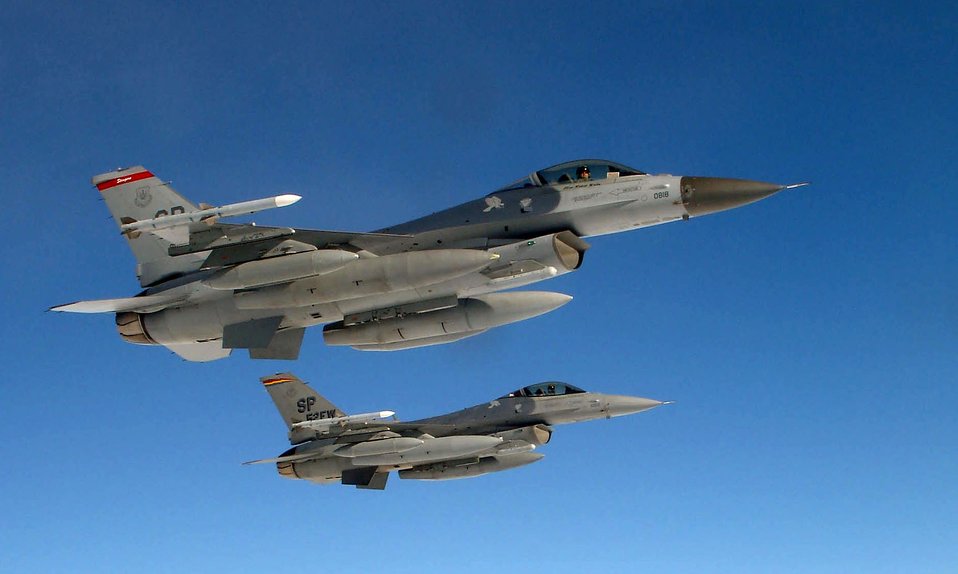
Spangdahlem F-16 crashes

An F-16 Fighting Falcon, similar to the ones shown in the photo, crashed at 1 p.m. local time Sept. 14 near the town of Oberkail, Germany. The aircraft is with the 22nd Fighter Squadron at Spangdahlem Air Base, Germany.